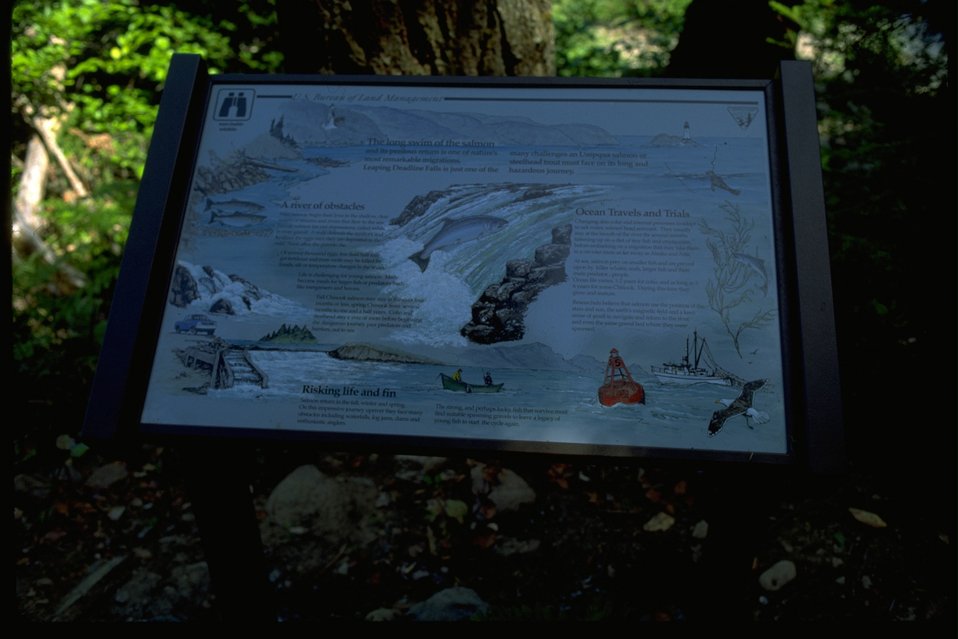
Interpretive panel close-up along trail to Deadline Falls.